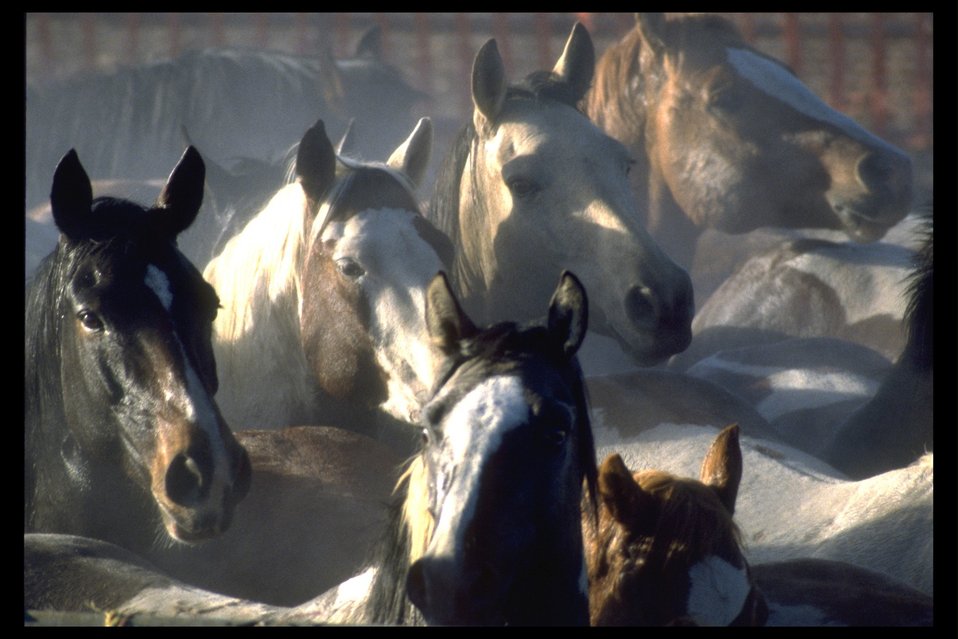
South Steens wild horses at a trap in the Burns District.